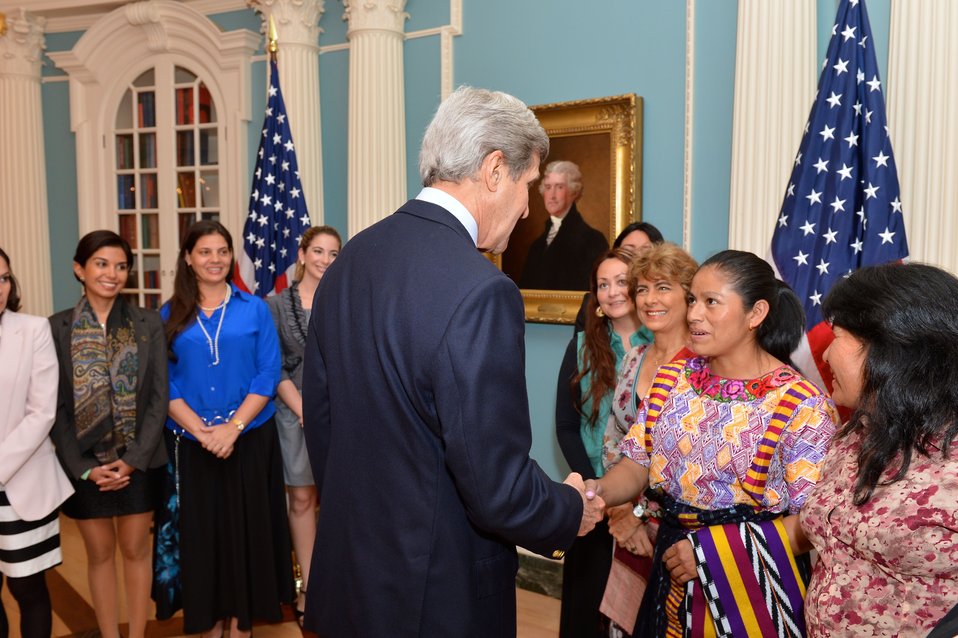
Secretary Kerry Meets With WEAmericas Entrepreneurship Group Participants

U.S. Secretary of State meets with women from the WEAmericas Entrepreneur Group at the U.S. Department of State in Washington, D.C., on May 9, 2014.